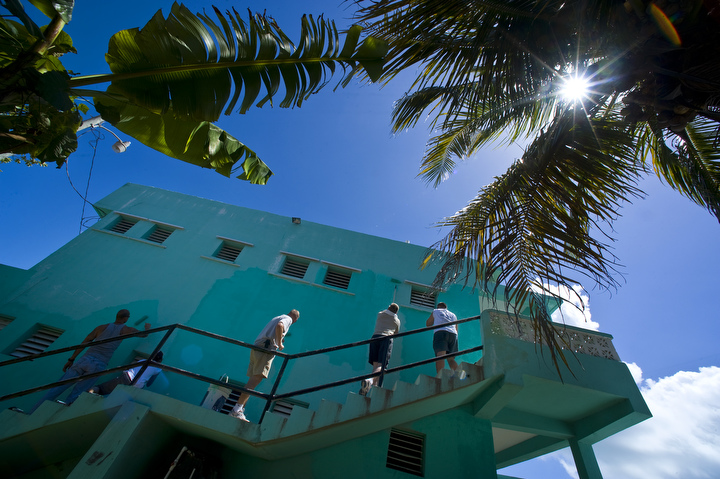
Operation Southern Partner paints a brighter future in Belize

Members of Operation Southern Partner spent the day painting the 13-classrom Stella Maris School for the Physically Disabled June 8 in Belize City, Belize.